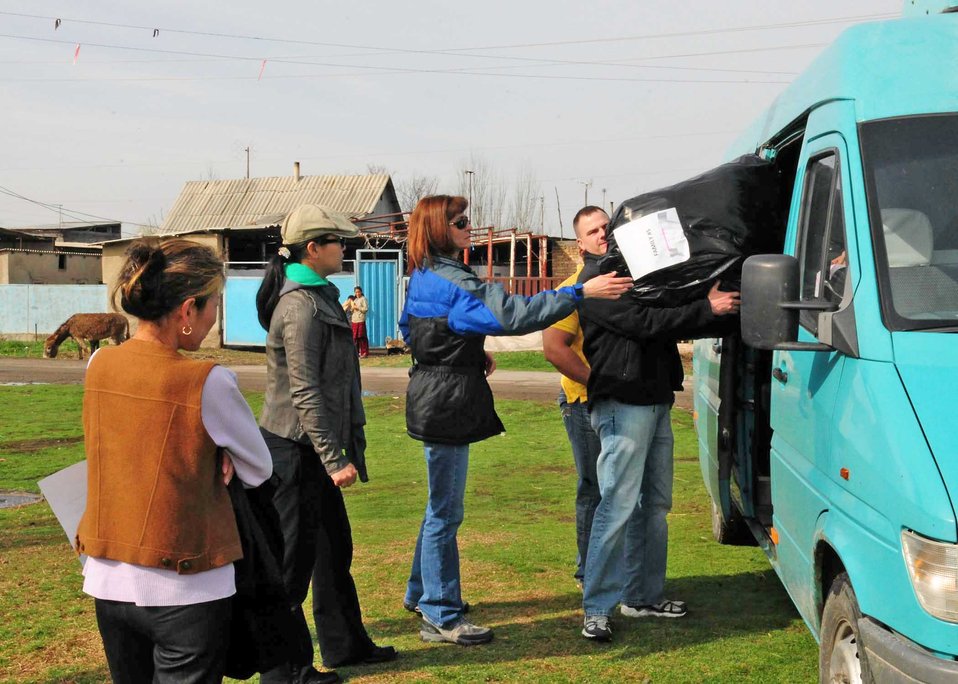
Manas Airmen deliver care packages to Kyrgyz villagers

People from the Transit Center at Manas, Kyrgyzstan, unload humanitarian assistance items collected from stateside bases and friends to distribute to families March 18, 2010, in Manas Village.